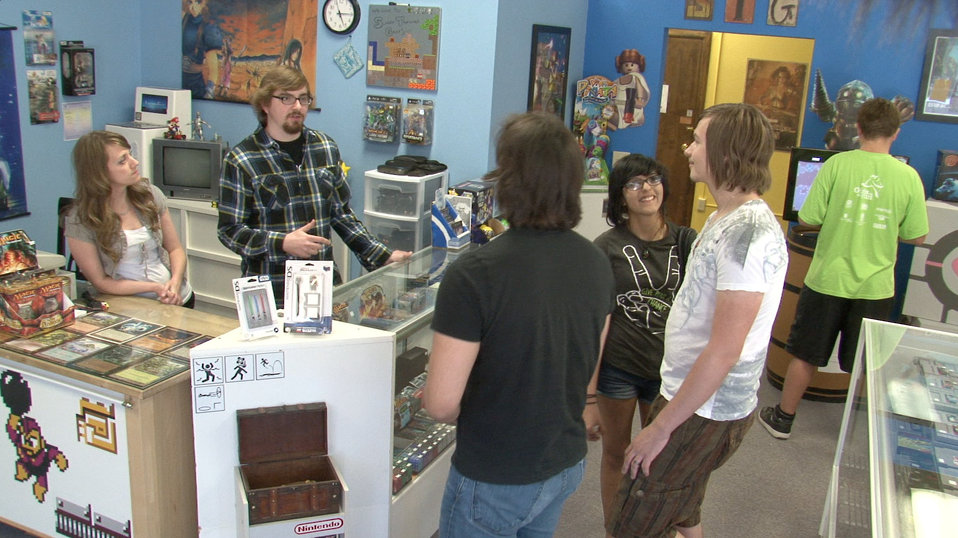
Aaron Cherney Profile - Richland

Aaron Cherney, center, at work at his small business.

Aaron Cherney
Radiological Control Technician
CH2M HILL Plateau Remediation Company

Aaron Cherney’s employment at the Hanford Site helped him fulfill his lifelong dream of opening a video game business in Richland.
Hired under the Recovery Act as a radiological control technician, Cherney has been able to parlay his earnings to launch a small business that his wife now manages.
“Everyone’s been blown away with the store and merchandise,” Cherney said. “And business has been very good so far.”